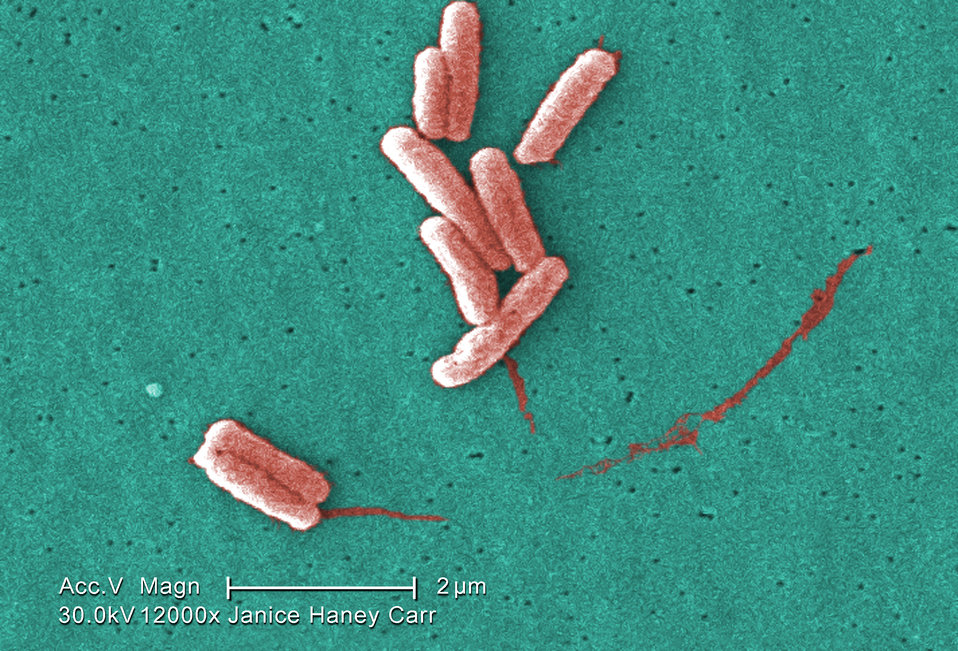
Under a very high magnification of 12000X, this colorized scanning electron micrograph (SEM) depicted a number of Gram-negative Legionella pneumophila bacteria. Please see PHIL 11092 through 11152 for additional SEMs of these organisms, specifically PHIL 11139 for a black and white version of this image. Of particular importance, is the presence of polar flagella, and pili, or long streamers, which due to their fragile nature, in some of these views seem to be dissociated from any of the bacteria.